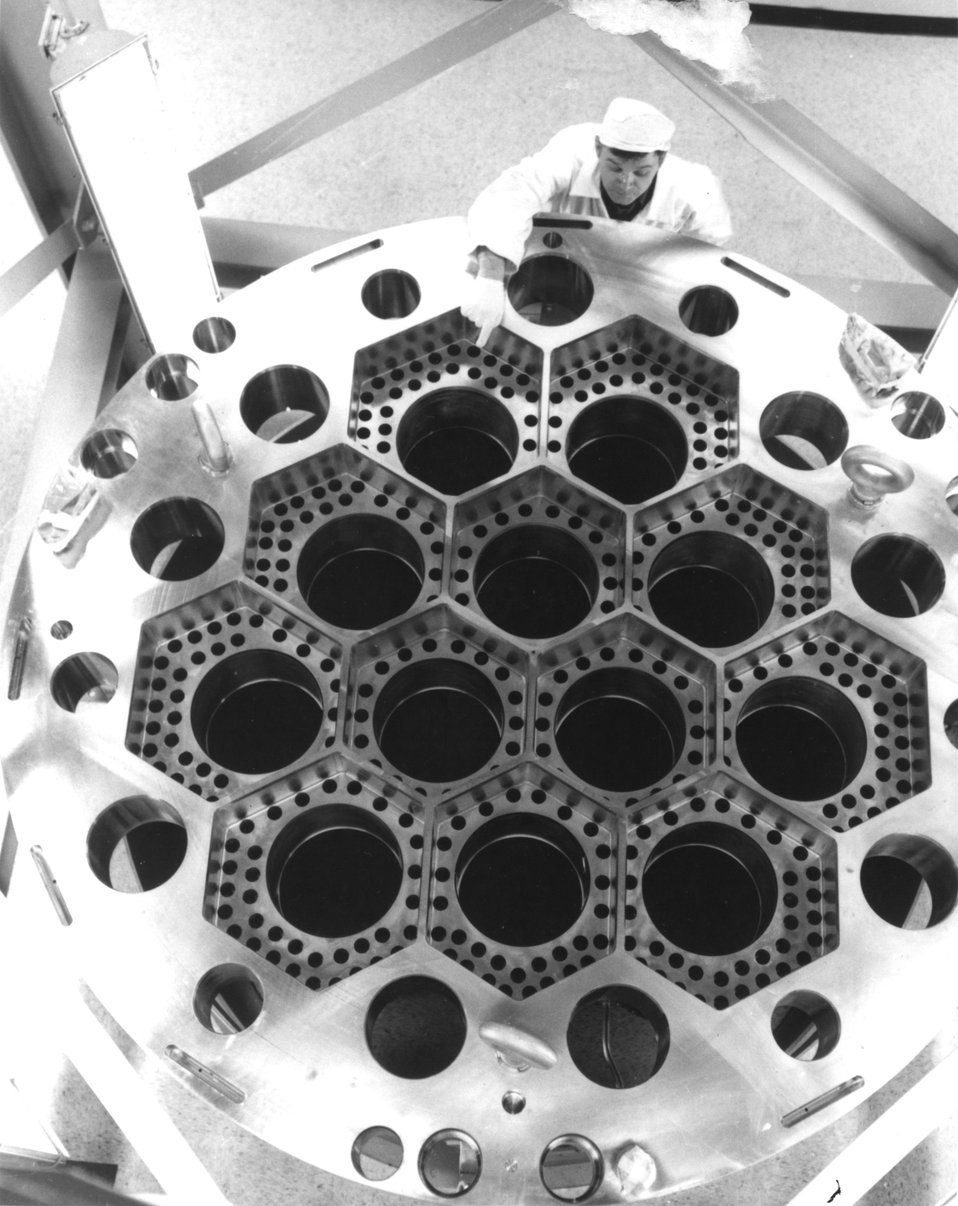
The top face of a light-water breeder reactor bottom plate delivered to the AEC's Shippingport (Pa.) Atomic Power Station in 1973. c. 1974